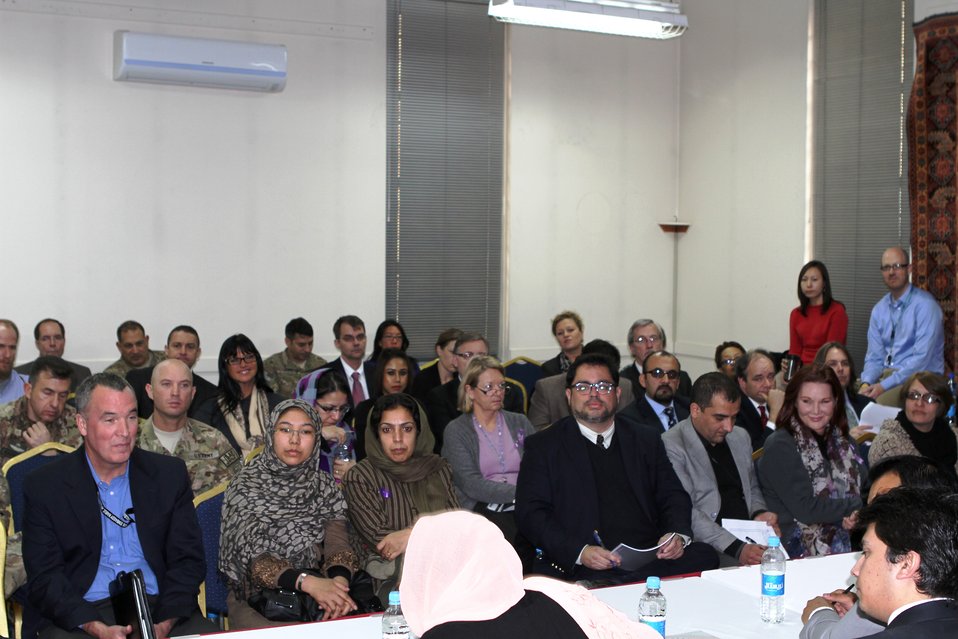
Presentation of the ACTA Civil Society analysis of the FY 1392 Afghan national budget